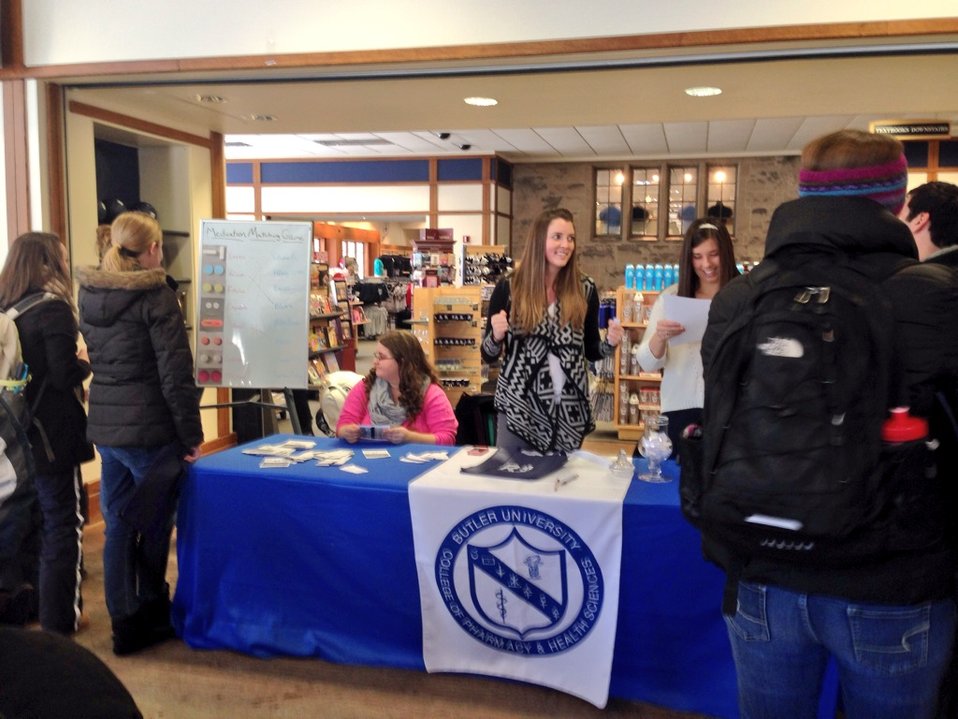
Getting the Word out During NDFW

Students from Butler University Generation Rx hold their 2014 NDFW Event in Indianapolis, IN.